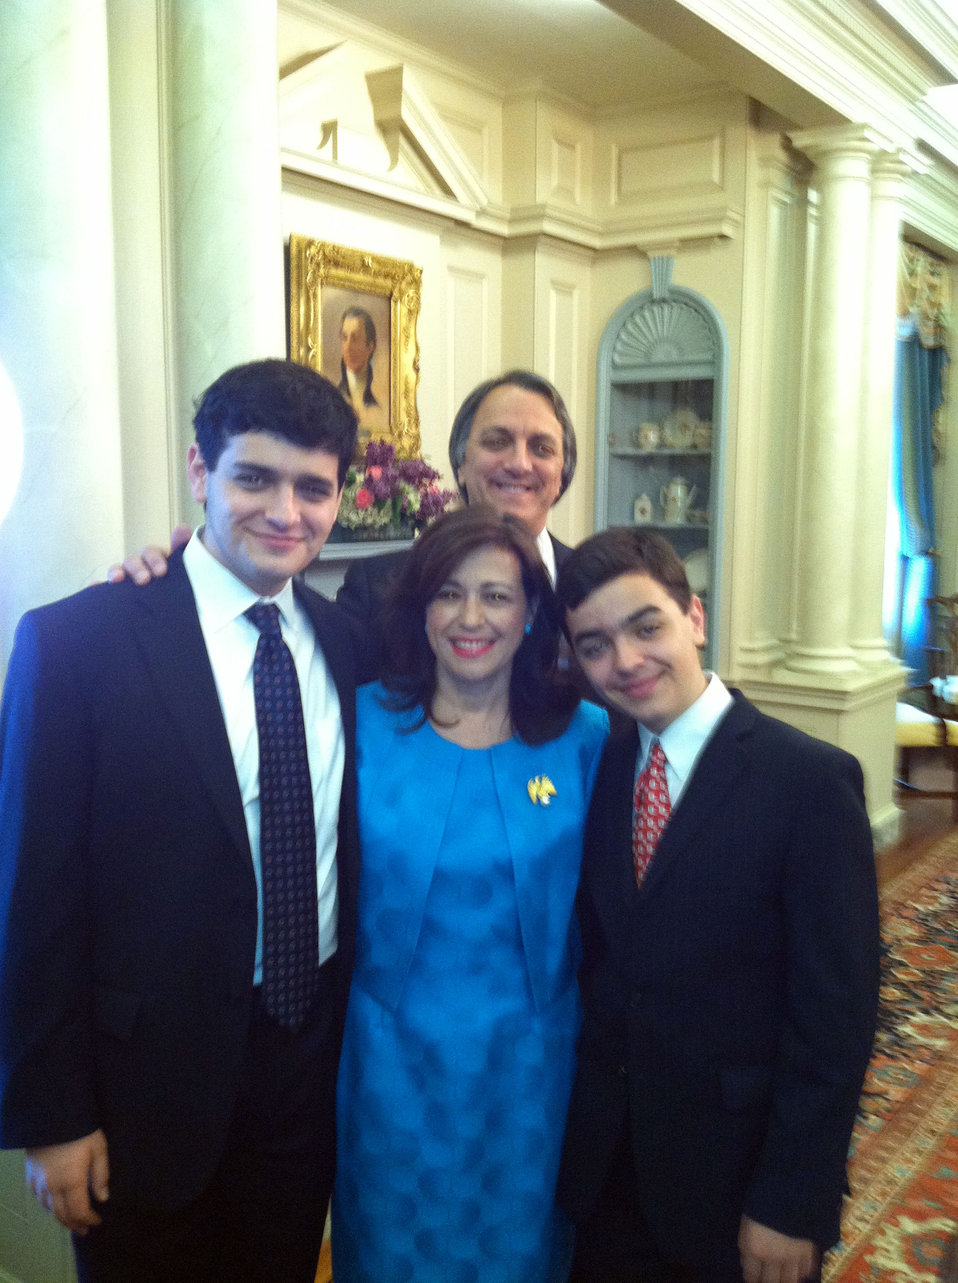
Under Secretary Sonenshine With Her Family

Under Secretary of State for Public Diplomacy and Public Affairs Tara Sonenshine with her family before her swearing-in ceremony with Secretary of State Hillary Rodham Clinton at the U.S. Department of State in Washington, D.C., on April 24, 2012.